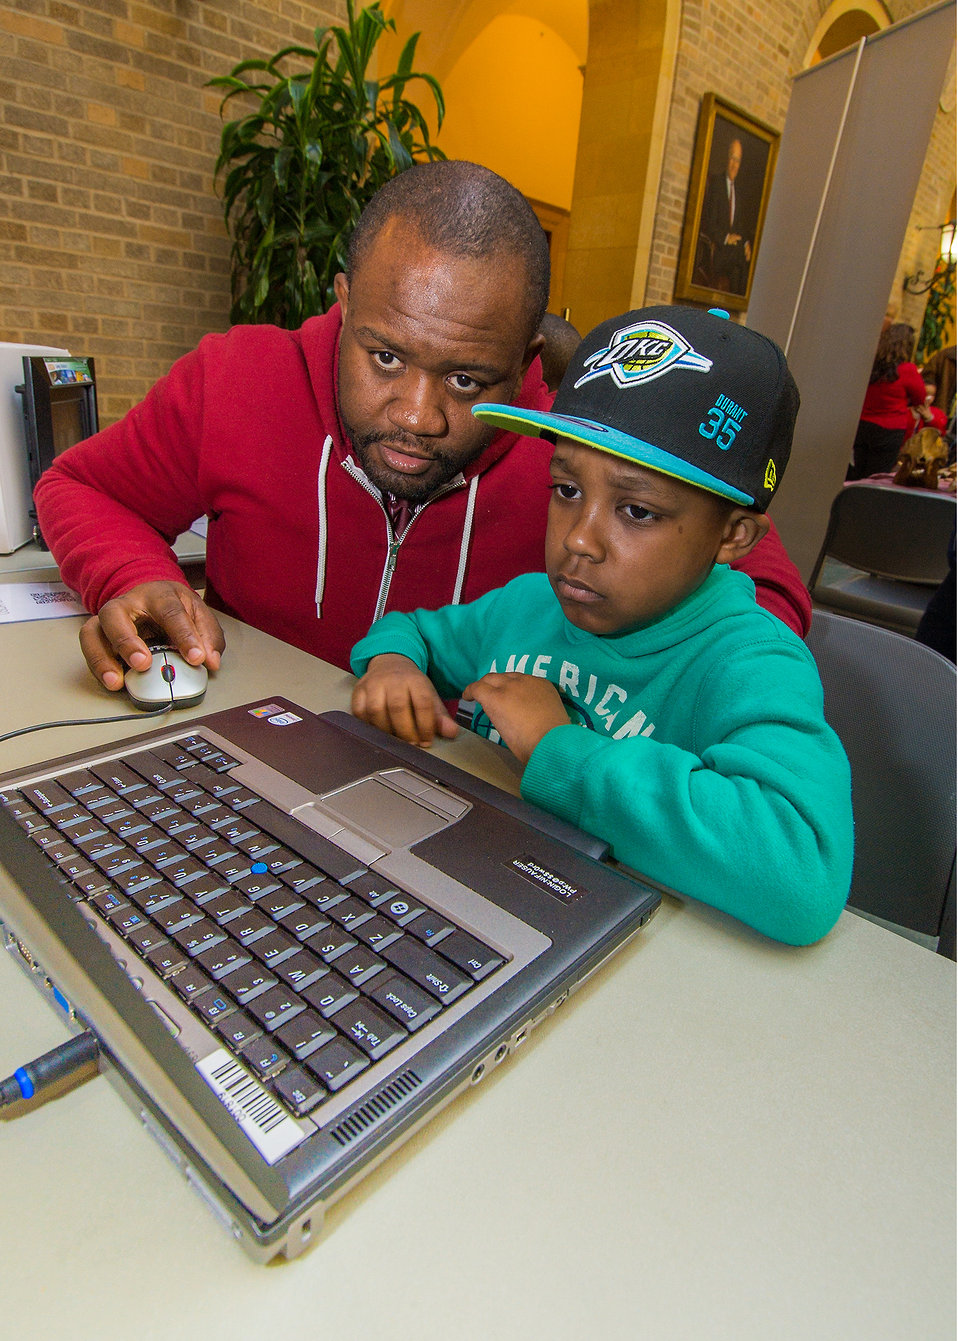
U.S. Department of Agriculture (USDA) Office of the Chief Information Officer (OCFO) Greg Bridges and his son, Josiah a budding civil engineer, design a park he would like to play in at USDA's National Institute of Food and Agriculture (NIFA) booth at the annual USDA's annual Bring Your Daughters and Sons to Work on Thursday, Apr. 24, 2014 in Washington, D.C. The event offers employees the opportunity to bring their children to work to experience what they do in their profession and offer insight into other careers at USDA.